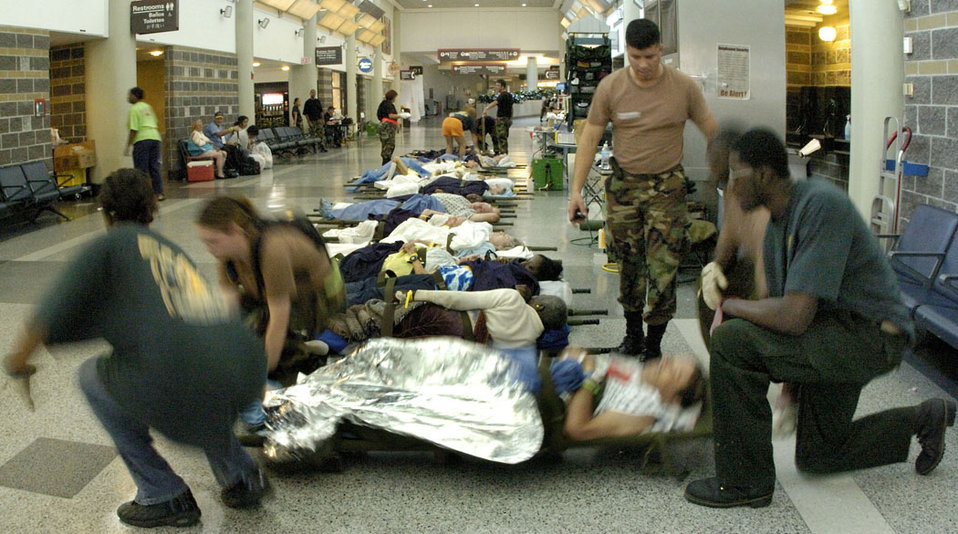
Air Force MASF is last stop for some hurricane victims in New Orleans

NEW ORLEANS -- A passenger terminal in the Louis Armstrong New Orleans International Airport is used to stage elderly patients for evacuation. More than 2,000 patients have been moved since operations began.